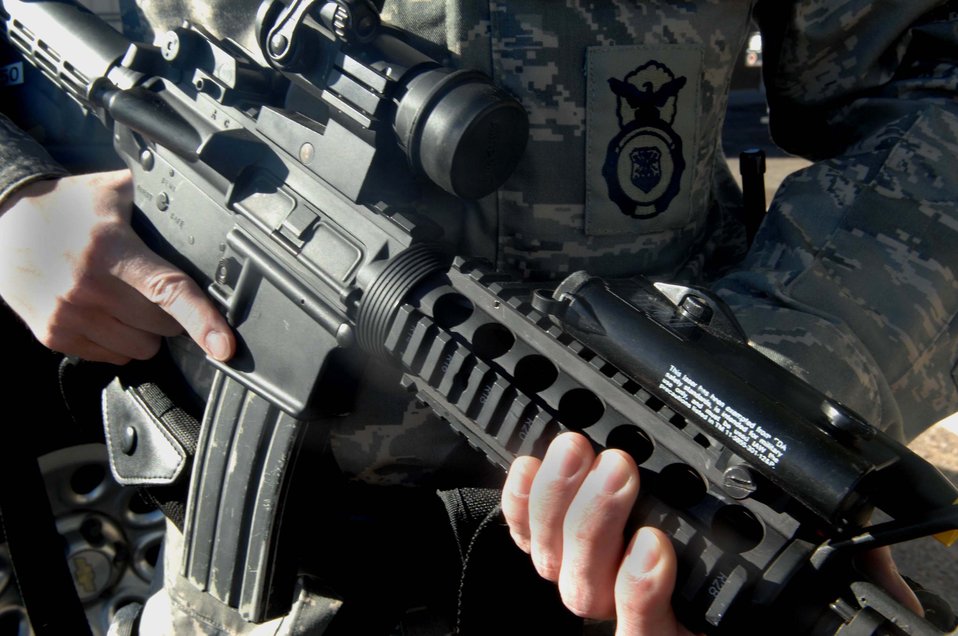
Medal for metal

The 355th Security Forces Squadron at Davis-Monthan Air Force Base, Ariz., is home to four Bronze Star winners and just recently welcomed home its first Combat Action Badge recipient. In 2007 alone, approximately 71 percent of the 355th SFS assigned members deployed.